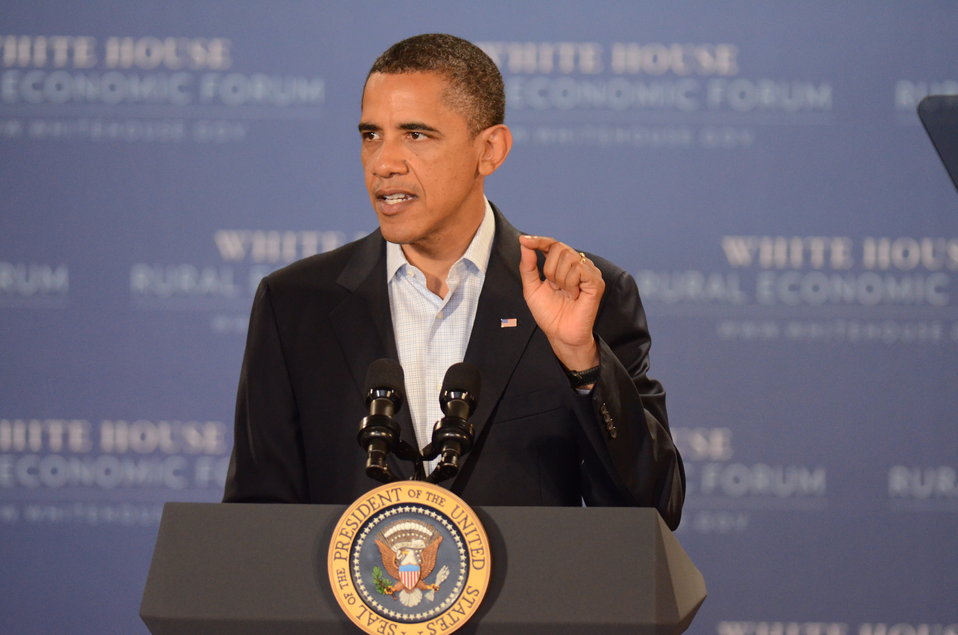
President Barack Obama speaking at the Northeast Iowa Community College, for a White House Rural Economic Forum on Tuesday, Aug. 16, 2011. The President’s visit will focus on agriculture’s contribution to the national economy, and how to create more jobs in rural America.